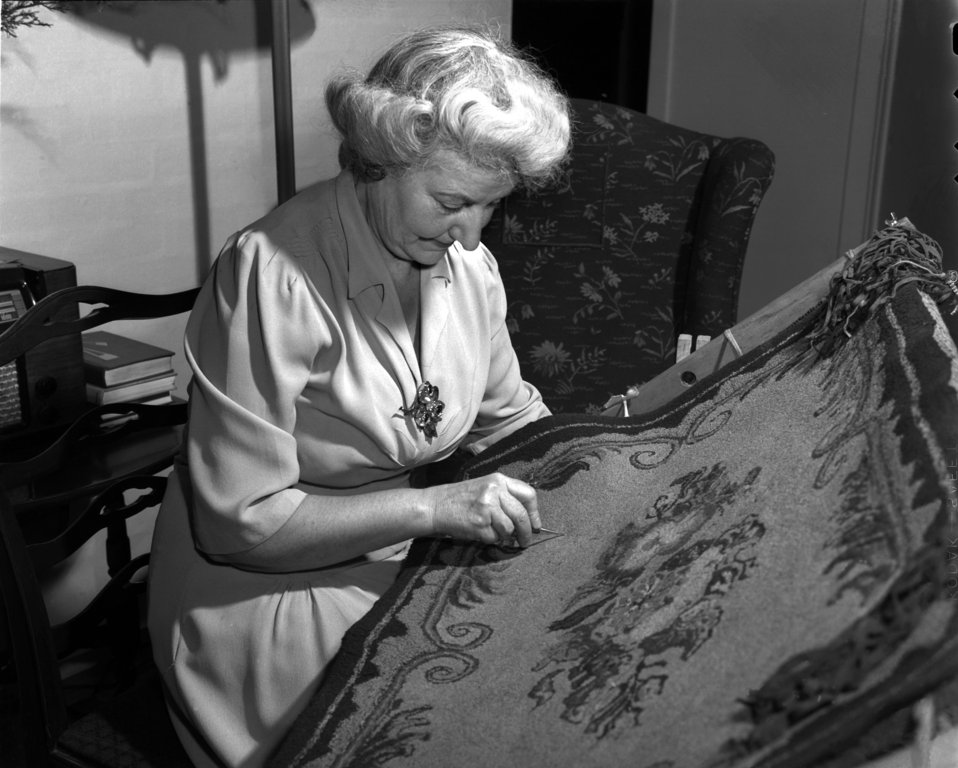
Mrs. M.K. Walsh Oak Ridge

3259-3a1DOE photo Ed Westcott 1-17-1947 Oak Ridge Tennessee